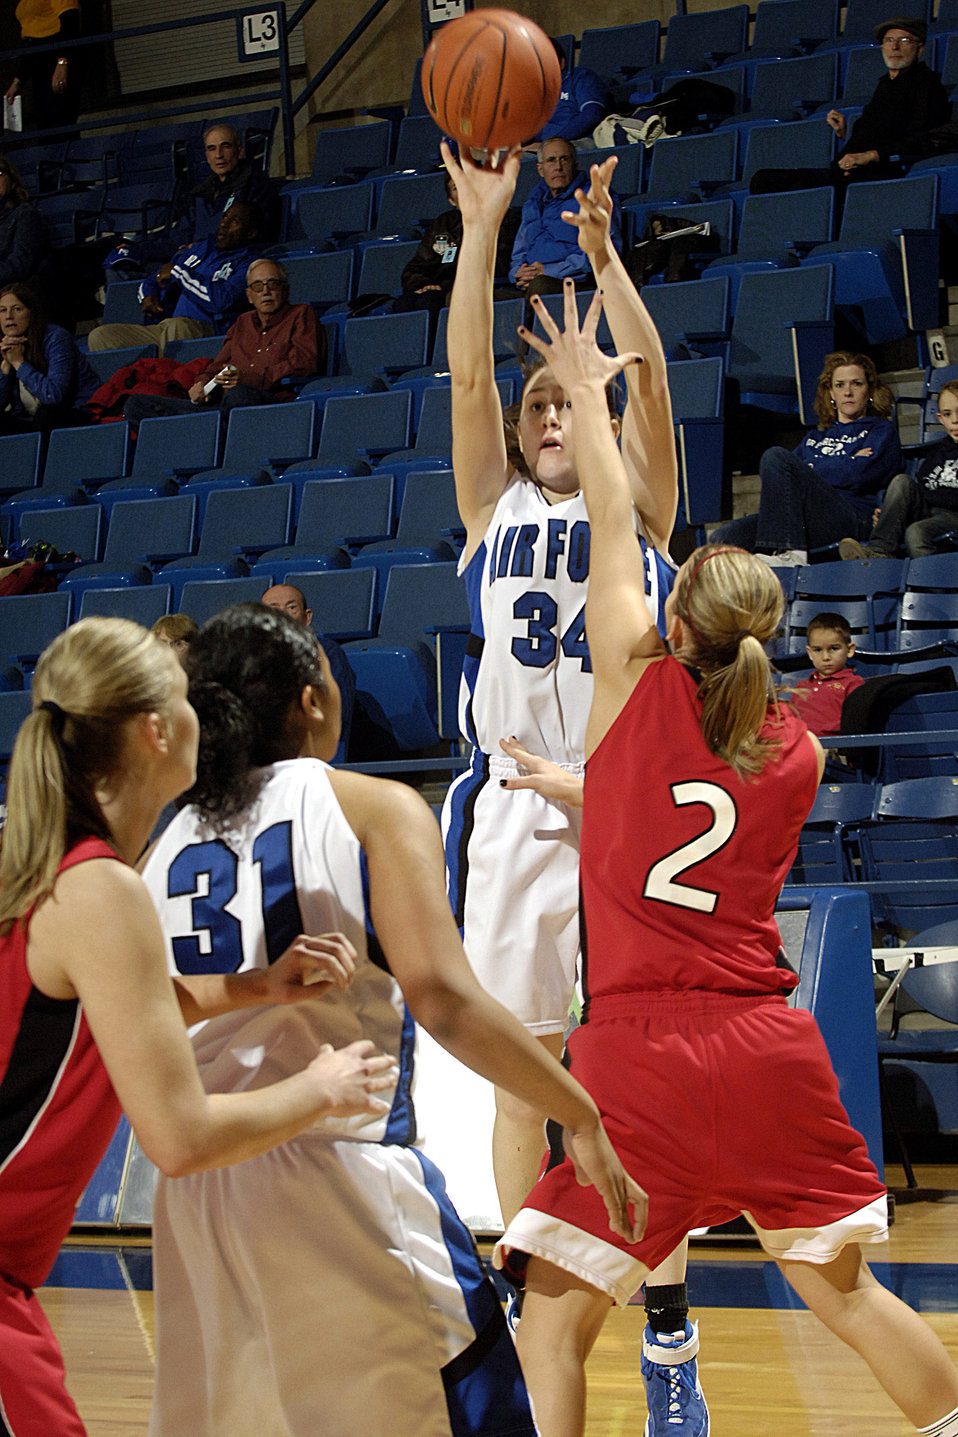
Lady Falcons fall to Utah

U.S. Air Force Academy Falcon junior guard Brooke Cultra takes a shot during the 60-50 loss against Utah Jan. 9 in Clune Arena at Colorado Springs, Colo.